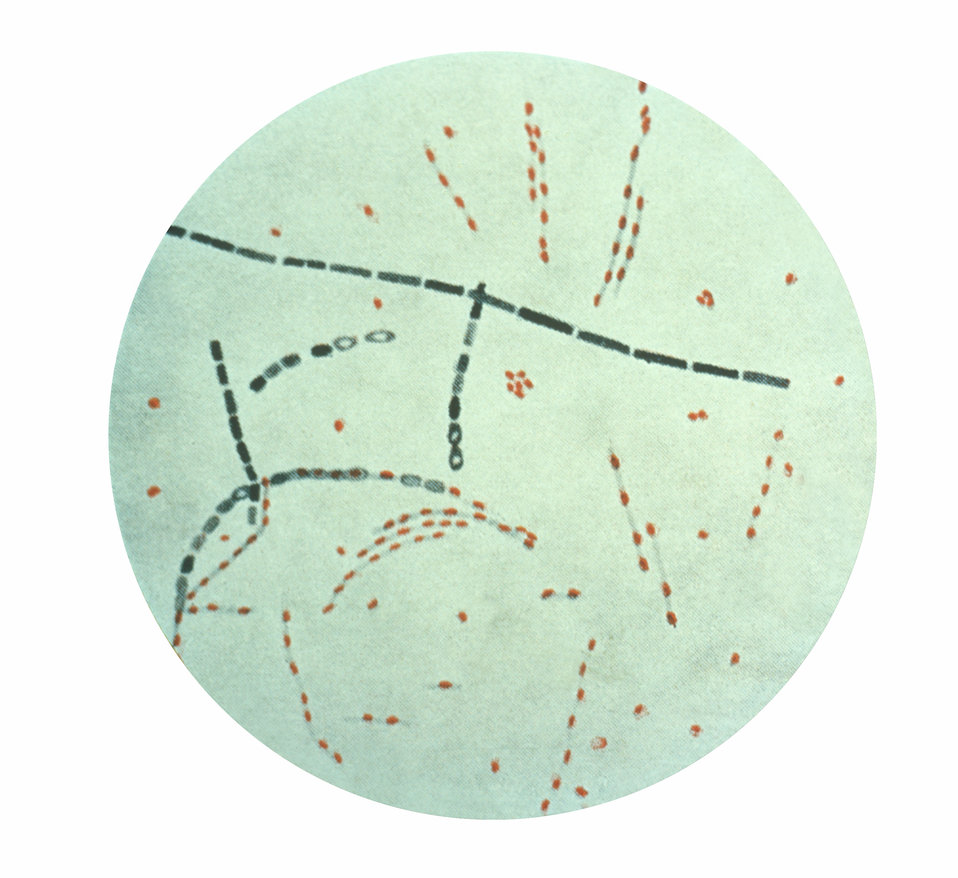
Bacillus anthracis from agar culture.